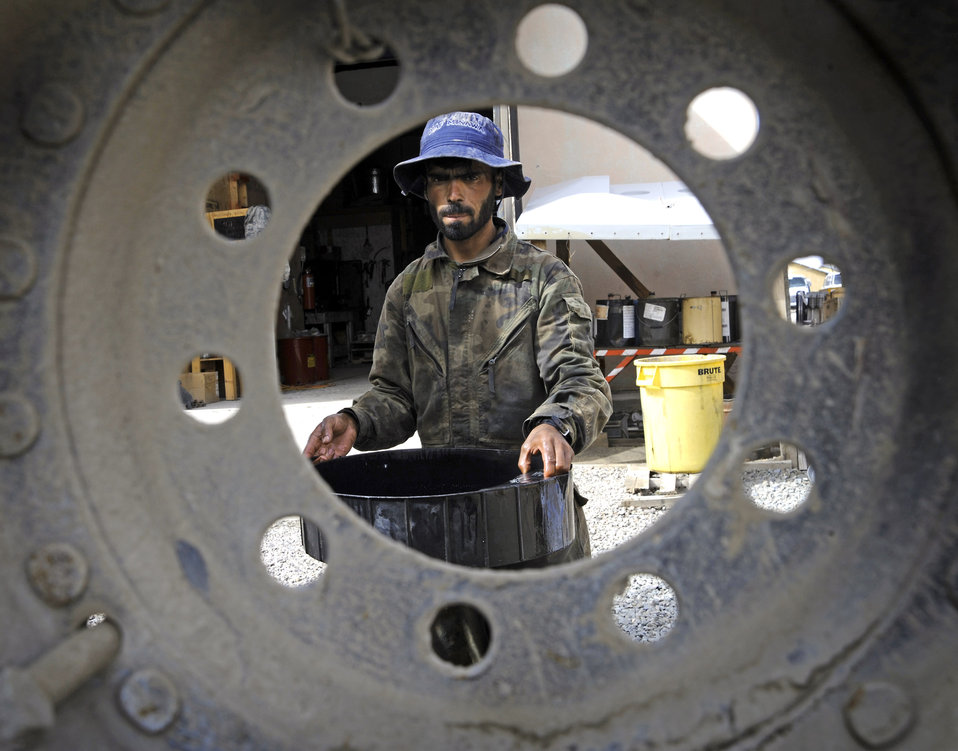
Vehicle maintainers travel rough road

A local national working for the Paktya Provincial Reconstruction Team's vehicle maintenance unit carries a vat of oil he drained out of a medium tactical vehicle April 20 at Forward Operating Base Gardez, Afghanistan.